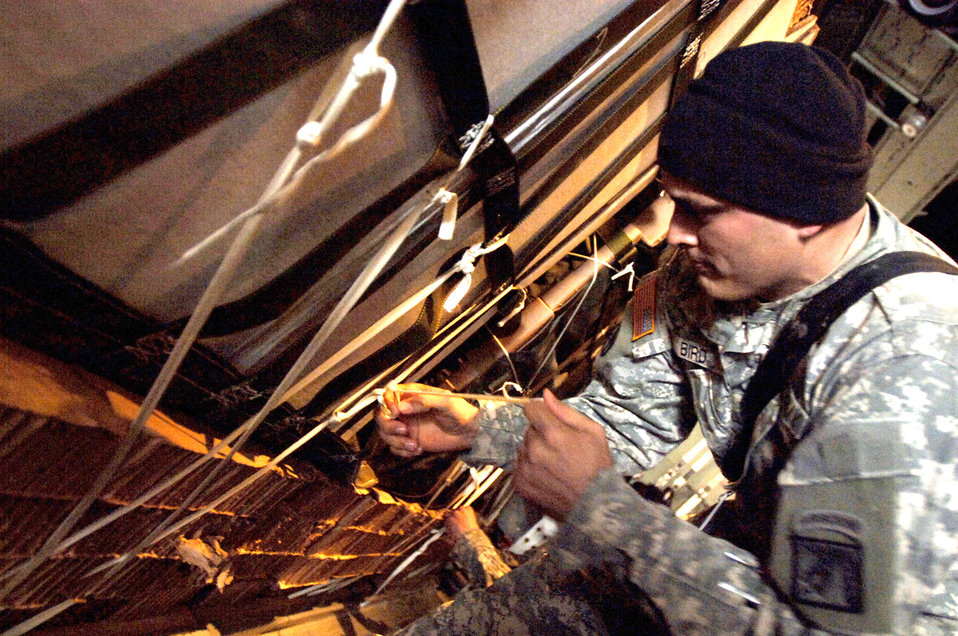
First JPADS airdrop over Iraq a success

Warrant Officer David Bird tightens skid boards of six 1,200-pound bundles of water and Meals, Ready to Eat onto a C-130 Hercules Feb. 16 at Balad Air Base, Iraq, in preparation to employ the Joint Precision Airdrop System in combination with the Improved Container Delivery System for the first time in Operation Iraqi Freedom Feb. 16. Pairing the JPADS mission planning software with the I-CDS bundles increases airdrop accuracy by 60 percent. Warrant Officer Bird is assigned to the 368th Cargo Transportation Company, 1034 Battalion.